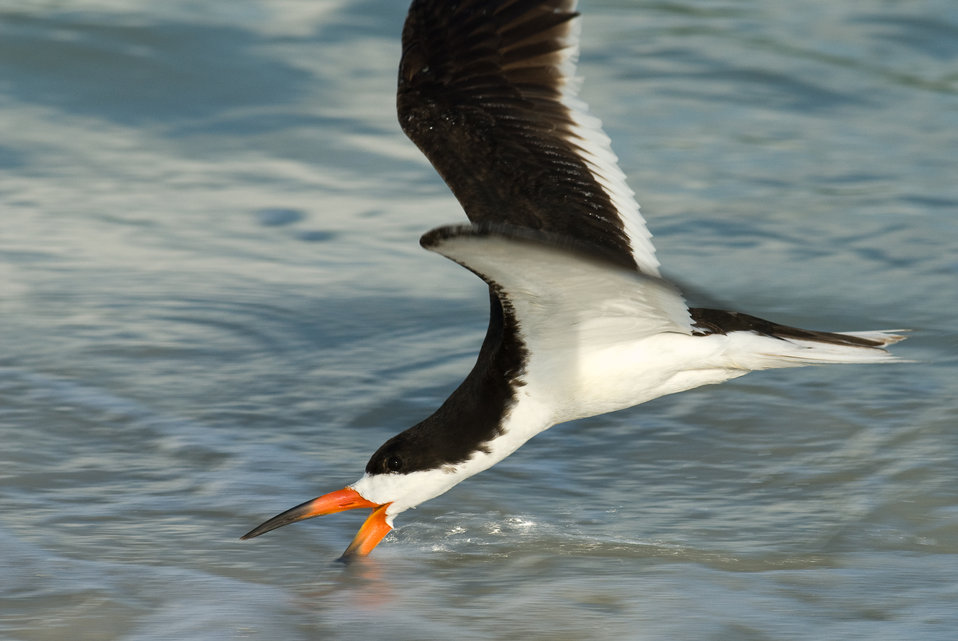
Black Skimmer

A Black Skimmer skims the water for food off Egmont Key National Wildlife Refuge